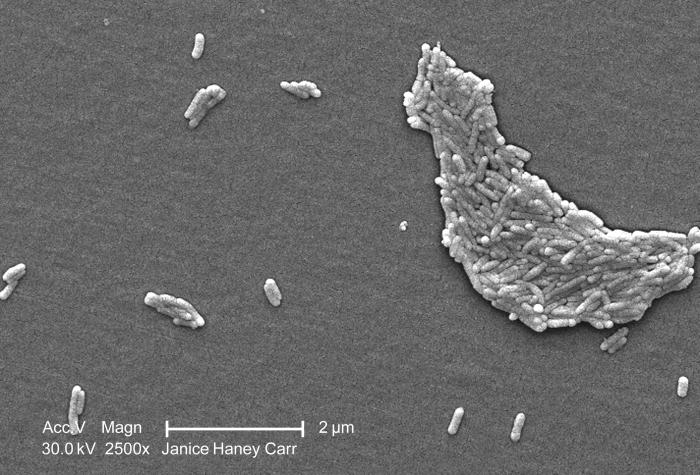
Under a magnification of 2500X, this scanning electron micrograph (SEM) revealed the presence of a large number of Gram-negative Salmonella typhimurium bacteria that had been isolated from a pure culture.